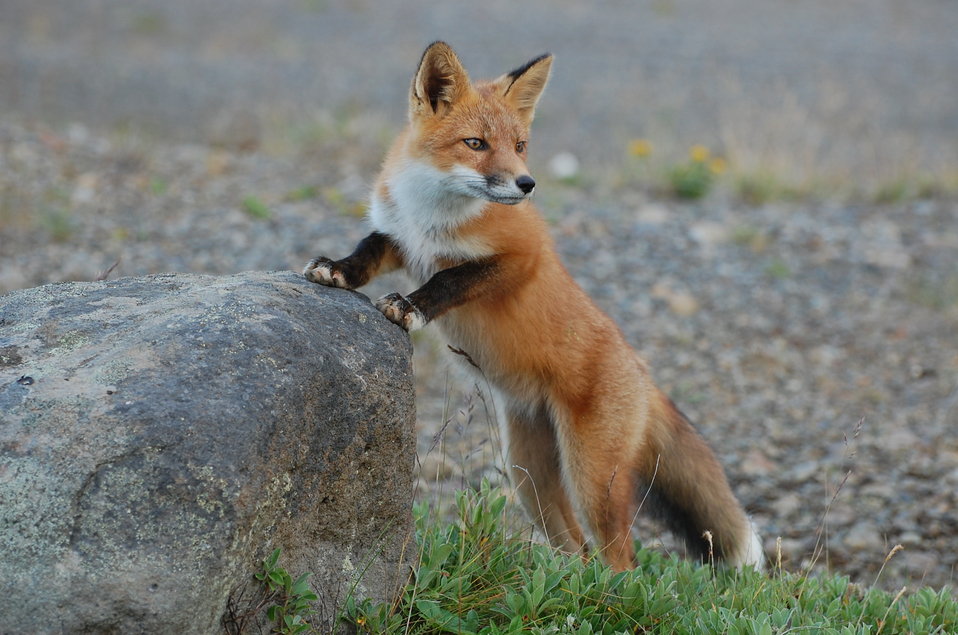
Red Fox kit

near Outer Marker, Izembek National Wildlife Refuge